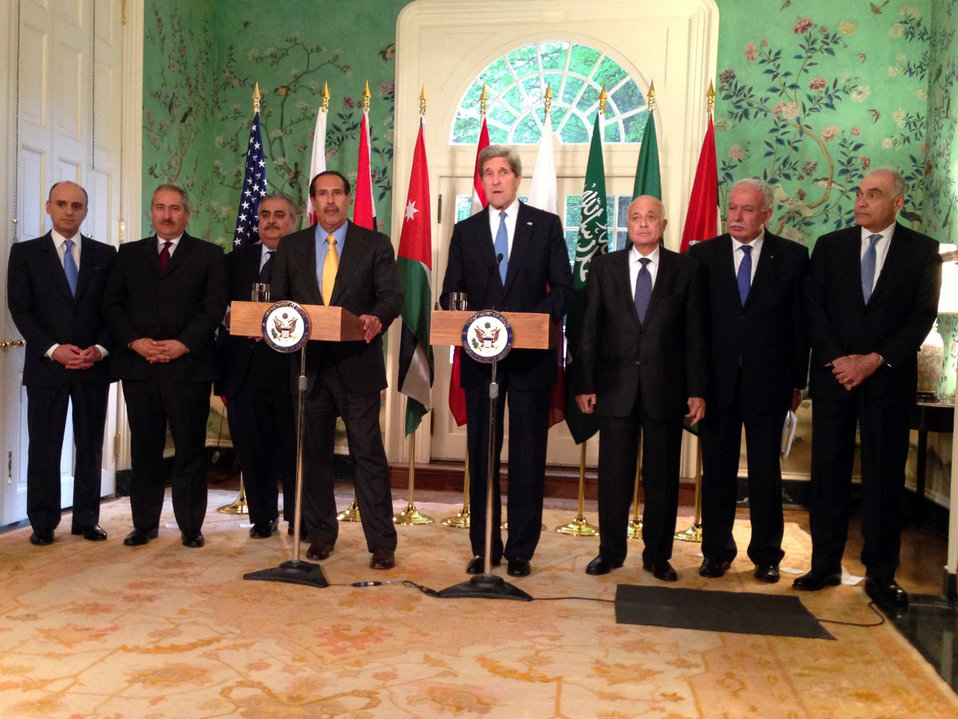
Secretary Kerry and Qatari Prime Minister and Foreign Minister Sheikh Hamad bin Jassim bin Jabr Al-Thani Deliver a Joint Statement

U.S. Secretary of State John Kerry and Qatari Prime Minister and Foreign Minister Sheikh Hamad bin Jassim bin Jabr Al-Thani deliver a joint statement after a multilateral meeting with the Arab League delegation at the Blair House in Washington, D.C., on April 29, 2013.